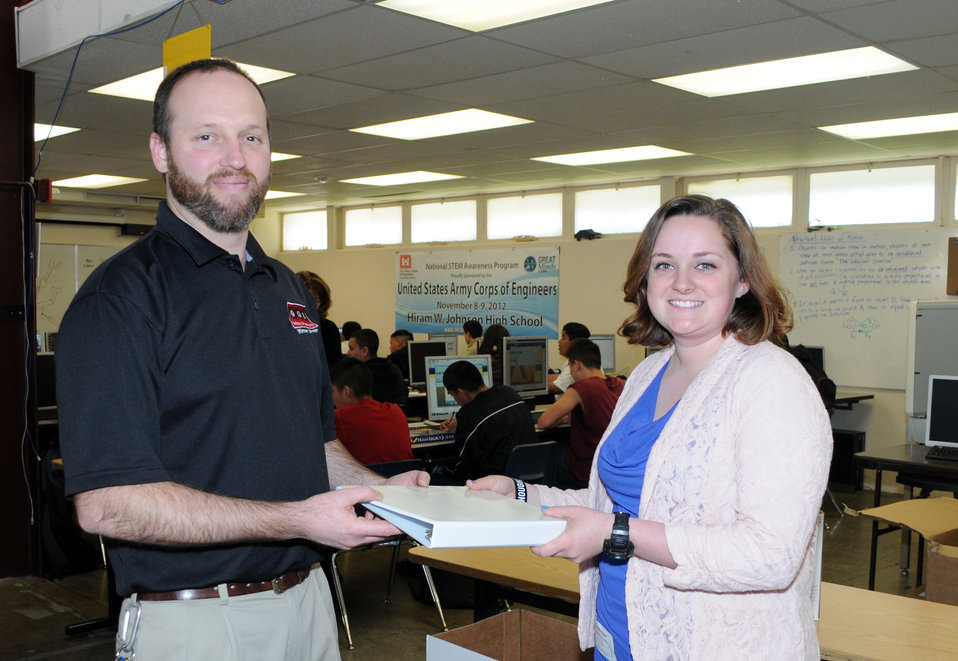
Corps donates excess binders to local Sacramento schools

Chris Schlesselman, a teacher at Hiram Johnson High School, receives one of 61 binders from Amanda Erwin, an equal employment opportunity specialist with the U.S. Army Corps of Engineers Sacramento District, during a visit to the Sacramento-area school Feb. 20, 2013.
The donation, part of the district’s outreach program, was for the high school’s Design and Engineering Academy and follows a Science, Technology, Engineering and Mathematics event in November 2012 at the school organized by the Sacramento District. Following the visit to Hiram Johnson, Erwin delivered an additional donation of 175 binders to Fern Bacon Middle School in Sacramento.